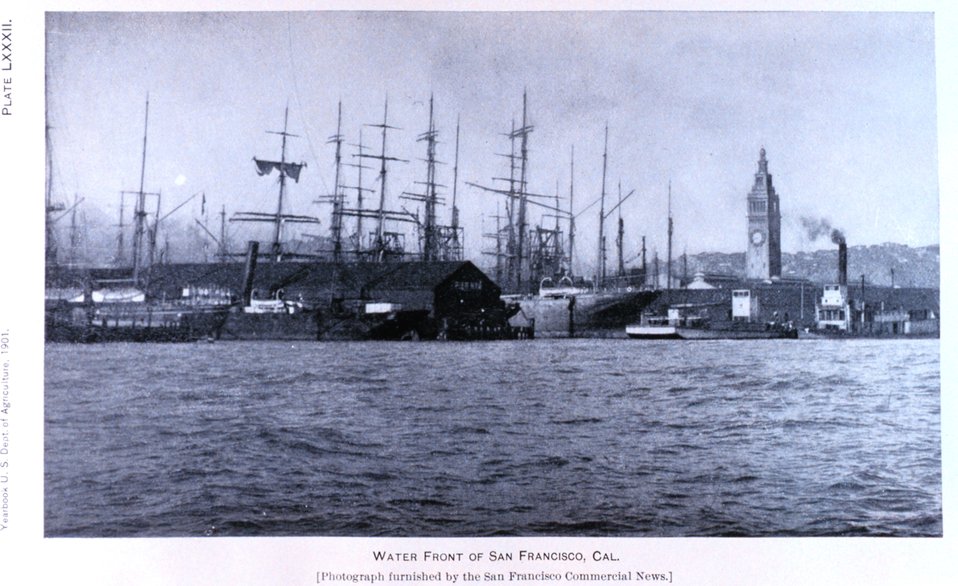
San Francisco waterfront as seen in: 'Wheat Ports of the Pacific Coast' by Edwin S. Holmes, Jr. Published in: Yearbook of the United States Department of Agric ulture 1901. Plate LXXXII, p. 568. Library Call Number S21 .A2 .